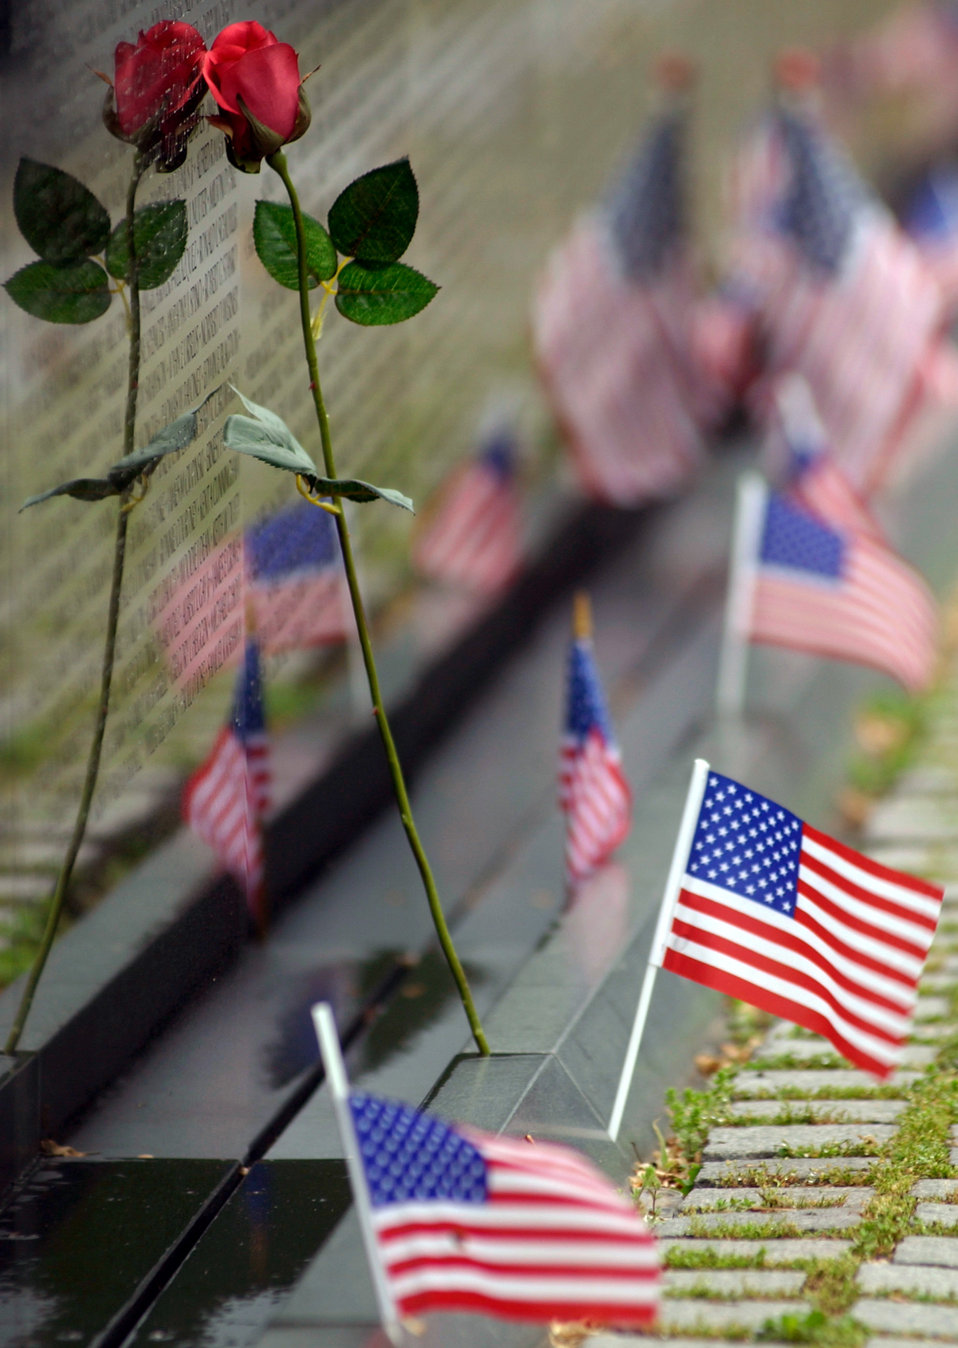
POWs, MIAs remembered

WASHINGTON (AFPN) -- Prisoners of war and those missing in action are remembered Sept. 16 on national POW/MIA Recognition Day. At the Vietnam War Memorial here, people leave behind patriotic and sentimental symbols of a nation's gratitude for veterans' sacrifices.